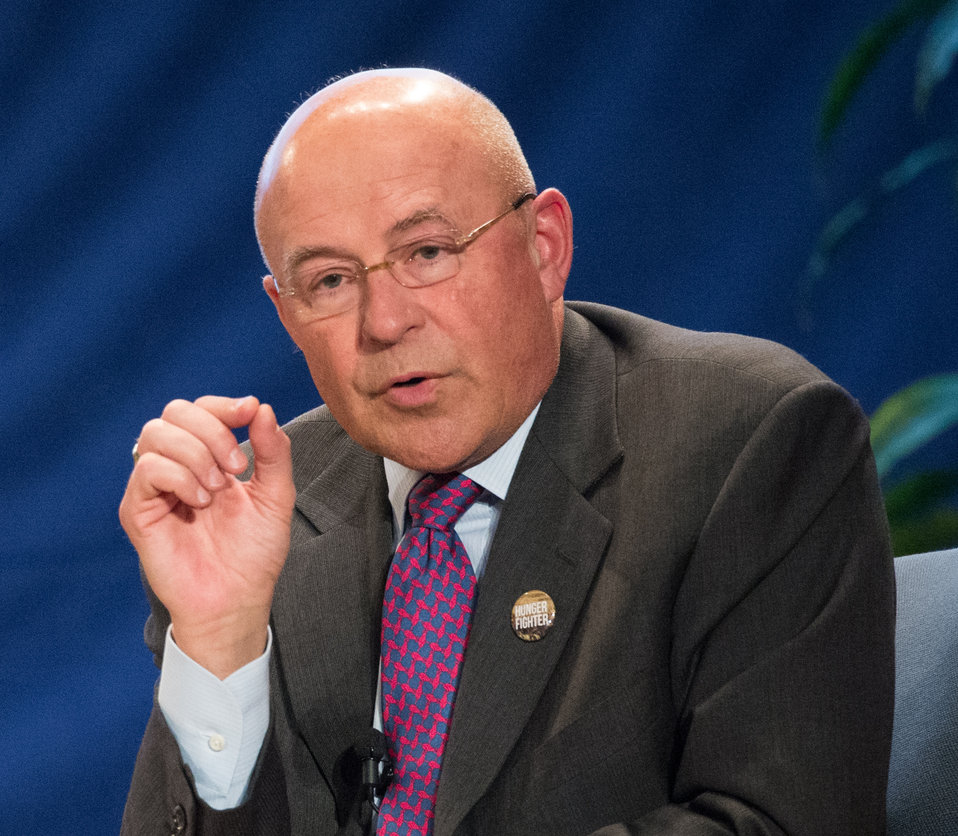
Monsanto Chief Technology Officer Robb Farley talks about mobile communication and it's relationship to agriculture, at the Borlaug Symposium commemorating the late Dr. Norman E. Borlaug's 100th Birthday hosted by the U.S. Department of Agriculture (USDA) in the Jefferson Auditorium of USDA in Washington, D.C. on Tuesday, Mar. 25, 2014. The symposium will highlight current efforts addressing global hunger. The symposium panels will feature high school and university students, as well as, scientists and policy advisors at U.S. Agency for International Development (USAID), USDA and Non-Governmental Organizations (NGO). Questions from students and interns are given priority to panelists. Lightening presentations will have leading students and individuals present what they are doing to help achieve Dr. Borlaug’s vision of creating the next generation of hunger fighters. The symposium was planned in partnership with: U.S. Agency for International Development, Cornell University, Iowa State University, University of Minnesota, The Norman Borlaug Institute for International Agriculture, Texas A and M University, and the World Food Prize.